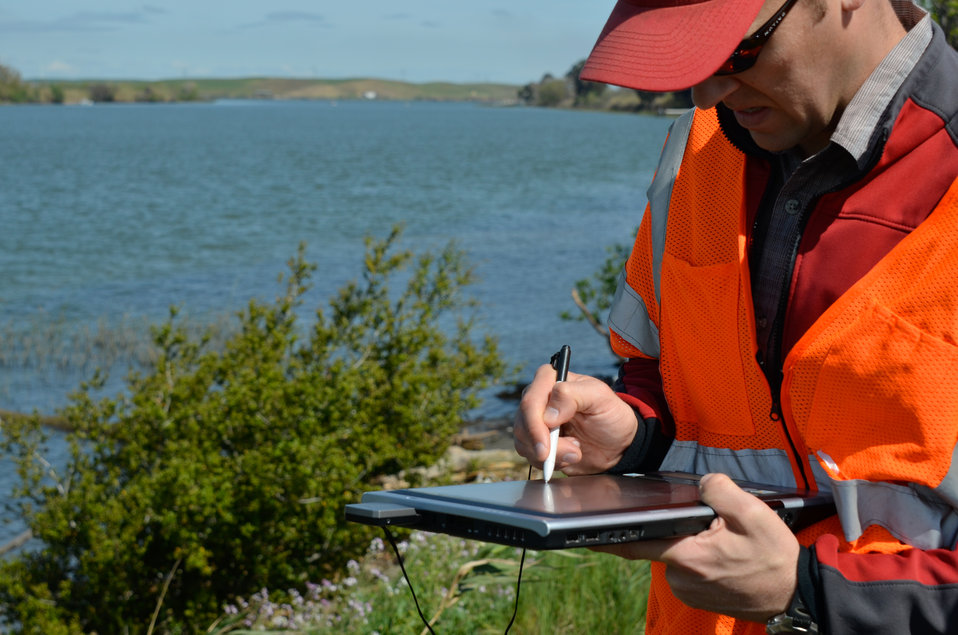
Inspecting a Sacramento River levee

Levee inspector Ryan Larson, with the U.S. Army Corps of Engineers Sacramento District, documents his findings during a routine levee inspection on the Sacramento River near Rio Vista, Calif., March 27, 2013. The results of U.S. Army Corps of Engineers levee inspections determine continued eligibility for federal aid in repairing levees damaged by floods or storms, and help communities understand and make informed decisions about their flood risk. Corps inspectors document all maintenance issues with GPS coordinates and photographs to help agencies that maintain levees prioritize and fix issues as quickly as possible.